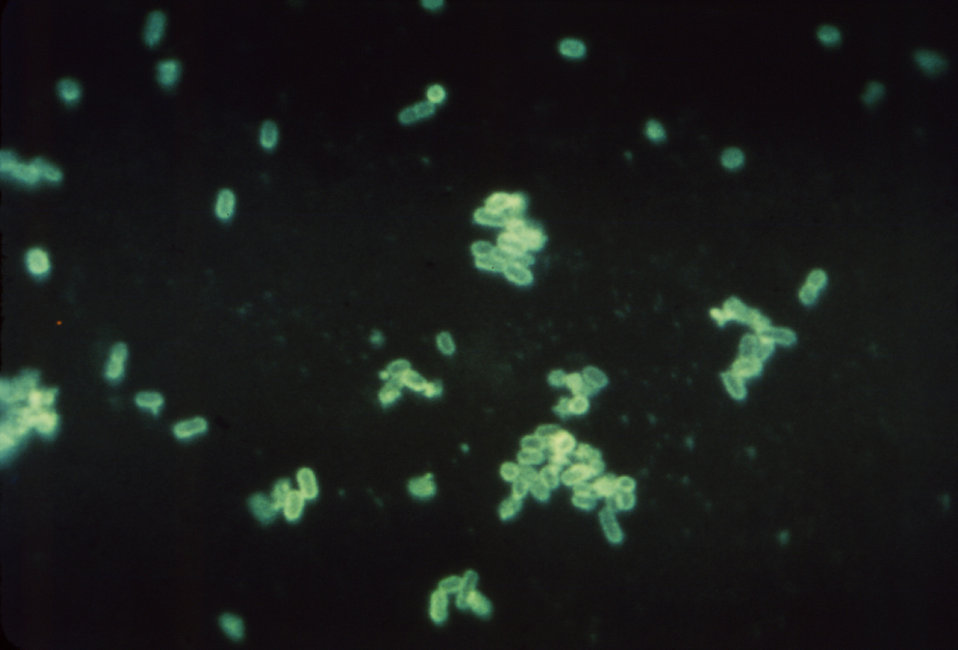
Magnified 600X, this fluorescent antibody stained photomicrograph revealed the presence of enteropathogenic Escherichia coli bacteria, which were found in a fecal smear from an infant with diarrhea. E. coli is a member of the family of bacterial organisms within the family Enteribacteriaceae, and contains the highly pathogenic strain, which has been given the label O157:H7.